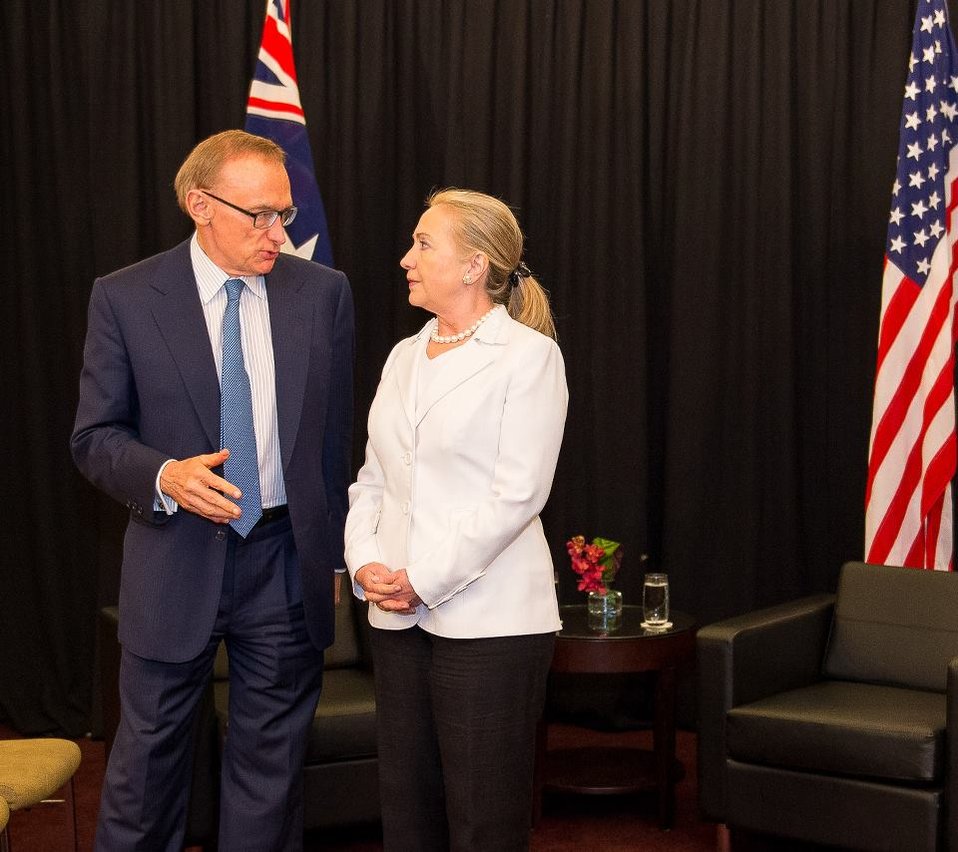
Secretary Clinton Meets With Australian Foreign Minister Robert Carr

U.S. Secretary of State Hillary Rodham Clinton meets with Australian Foreign Minister Robert Carr in Perth, Australia, November 13, 2012. [U.S. Embassy in Canberra, Australia photo by Travis Longmore/ Public Domain]